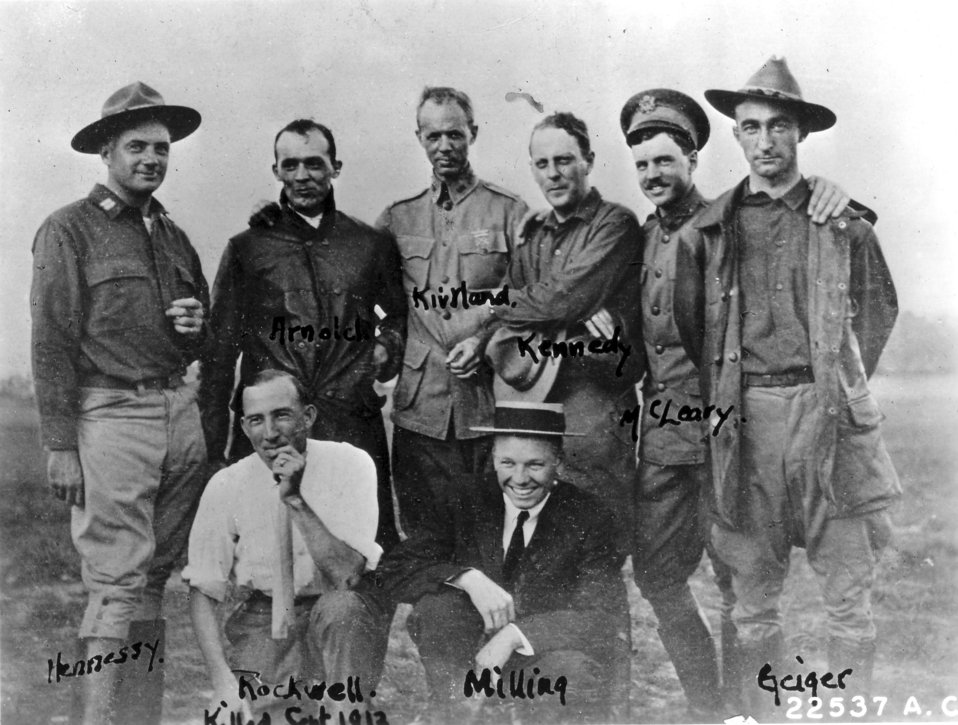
Early aviators

EARLY YEARS -- Capt. Hennessy, Lt. H.H. Arnold, Lt. Roy C. Kirtland, Capt. Frank N, Kennedy, Lt. McLeary, Lt. Harold Geiger, Lt. Thomas D. Milling and Lt. Louis C. Rockwell at College Park, Md., 1911.